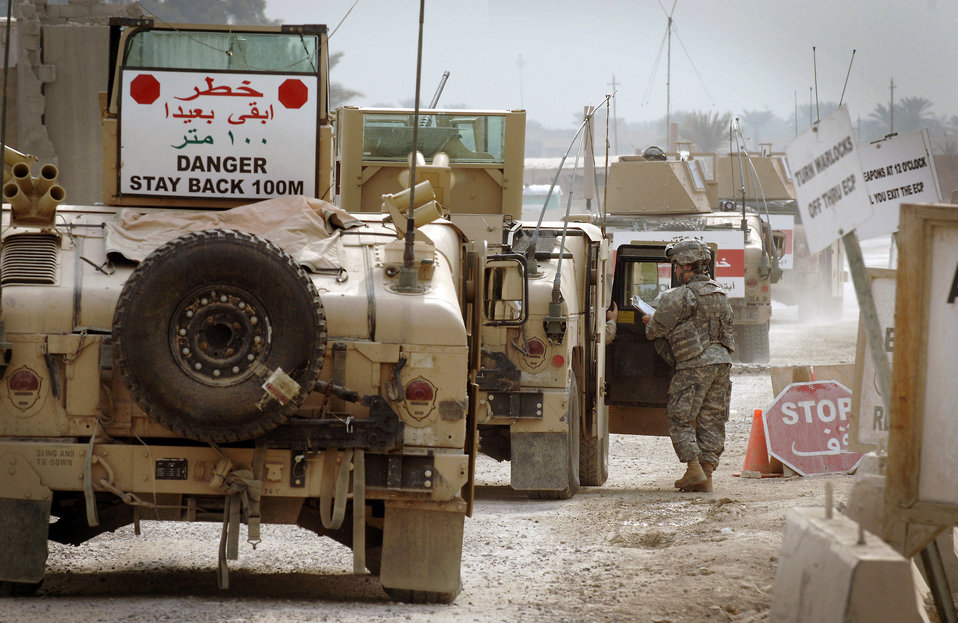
Latest radio technology declared ready

Prior to departing Camp Liberty for an eight-hour patrol through Baghdad, Staff Sgt. Justin Geers (inside vehicle) relays the number of people and vehicles in his patrol to Army Sgt. Bronwen Thompson. Once outside the camp, communication assets are critical. Sergeant Geers is the Air Force security forces squad leader. Sergeant Geers and his 12-member squad are assigned to the 732nd Expeditionary Mission Support Group's Detachment 7.